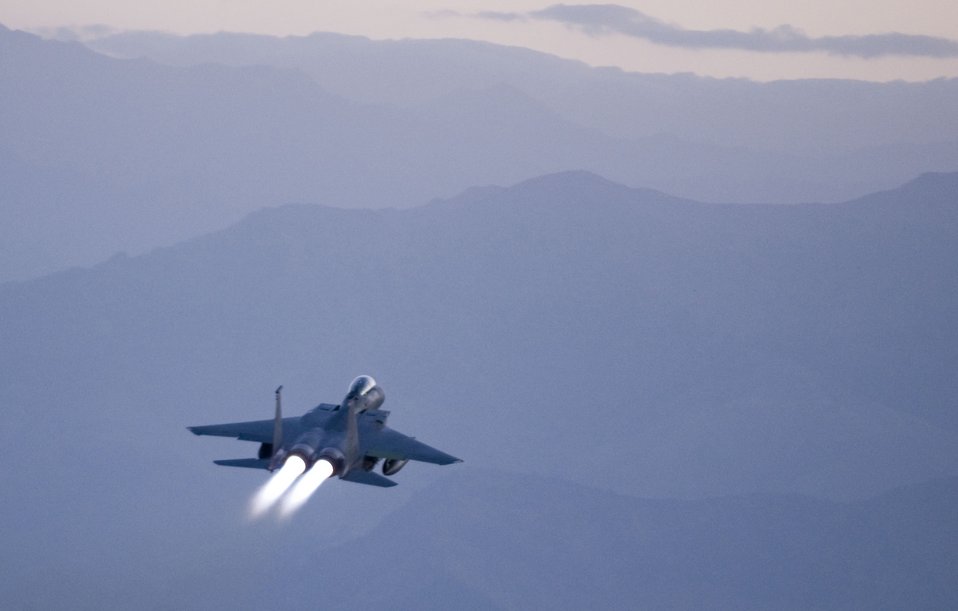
Strike Eagles fly dawn patrol

The roar of 50,000 pounds of thrust greets the new day Aug. 27 at Bagram Air Field, Afghanistan. A flight of F-15E Strike Eagles known as the dawn patrol flew above the painted mountains, protecting coalition forces in their close-air support mission.